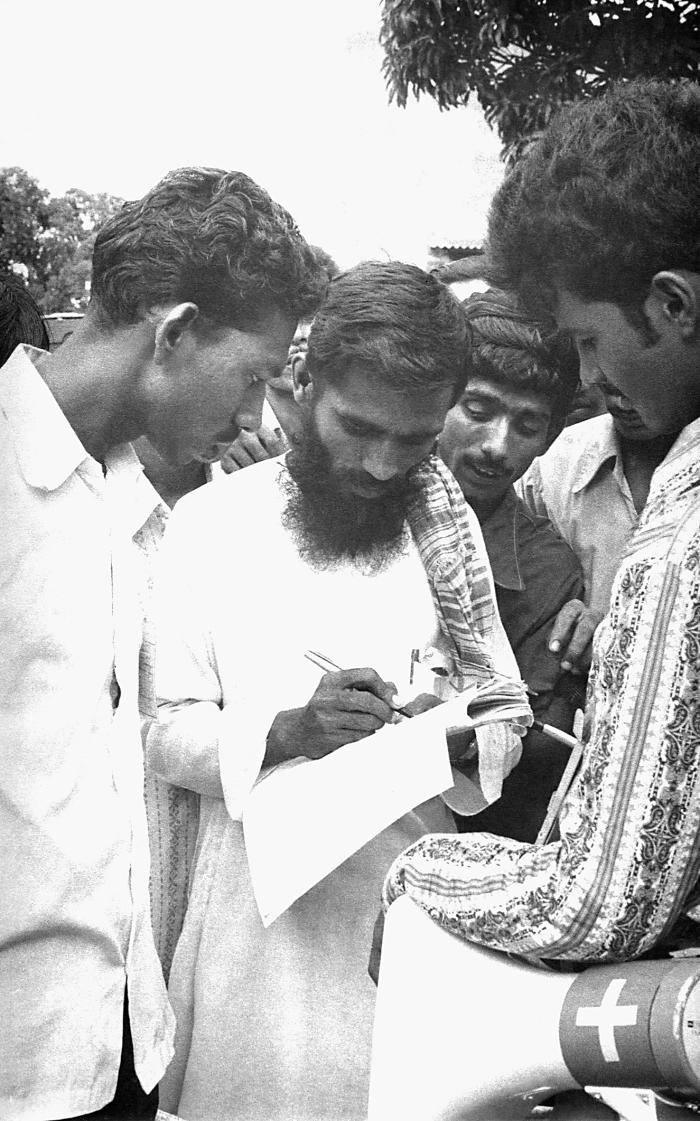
Note the megaphone in the lower right corner of this 1975 image. It had been used by the local volunteer smallpox eradication team member at right, in order to announce the monetary rewards paid to those who'd discovered, and brought to the attention of the eradication team, any confirmed smallpox cases. This image depicted a Bangladesh man filling out an information gathering questionnaire pertaining to his knowledge of any potential smallpox cases, which would then be investigated by appropriate team members.